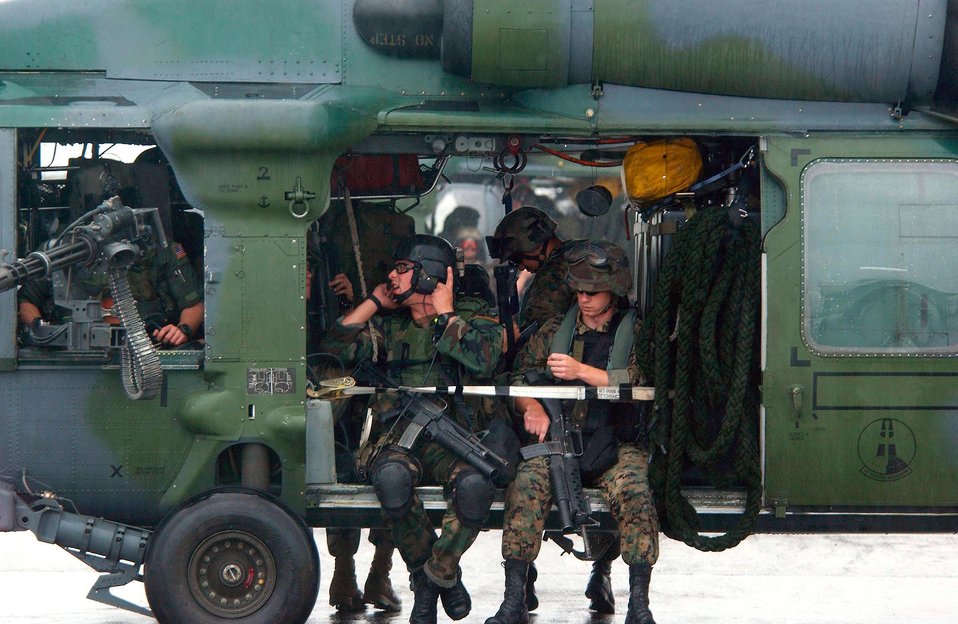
Send in the Marines

LUNGI, Sierra Leone -- An Air Force HH-60G Pave Hawk helicopter here prepares to bring Marines to augment security at the U.S. Embassy at Monrovia, Liberia, on July 21. The helicopter is deployed from the 56th Rescue Squadron at Naval Air Station Keflavik, Iceland.